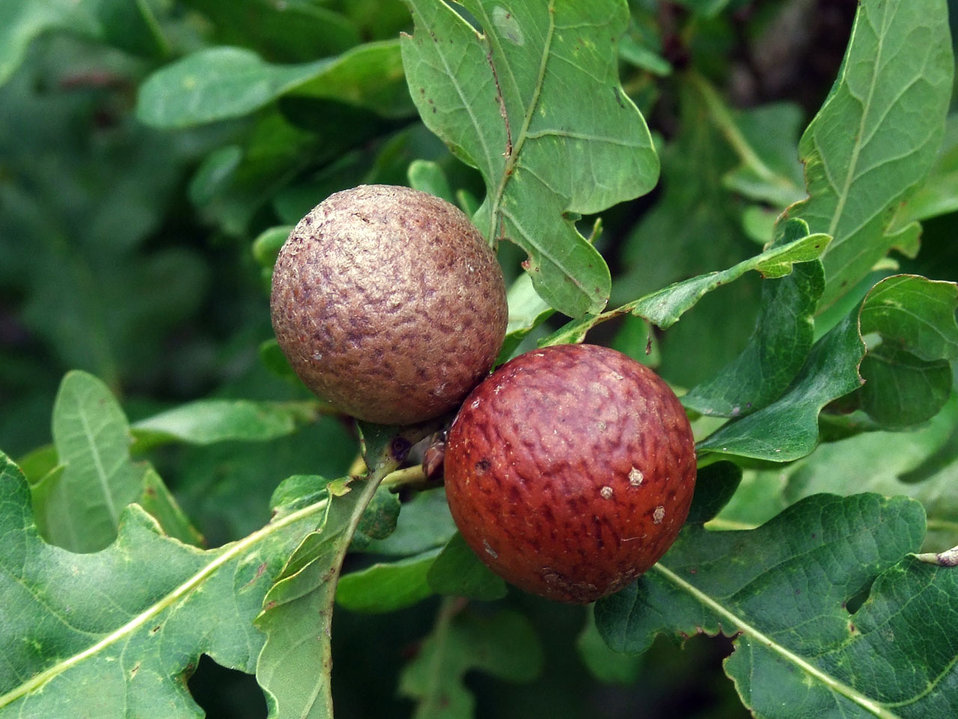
Oak tree leaves are often populated with this kind of spheres with worms live in this spheres.